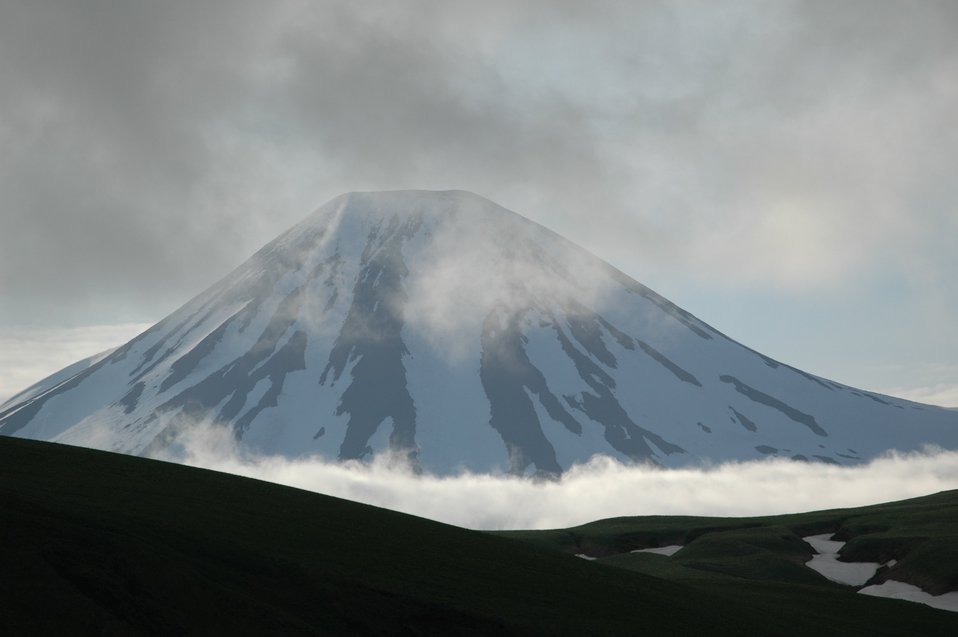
The peak of Tanaga Volcano seen from the north.